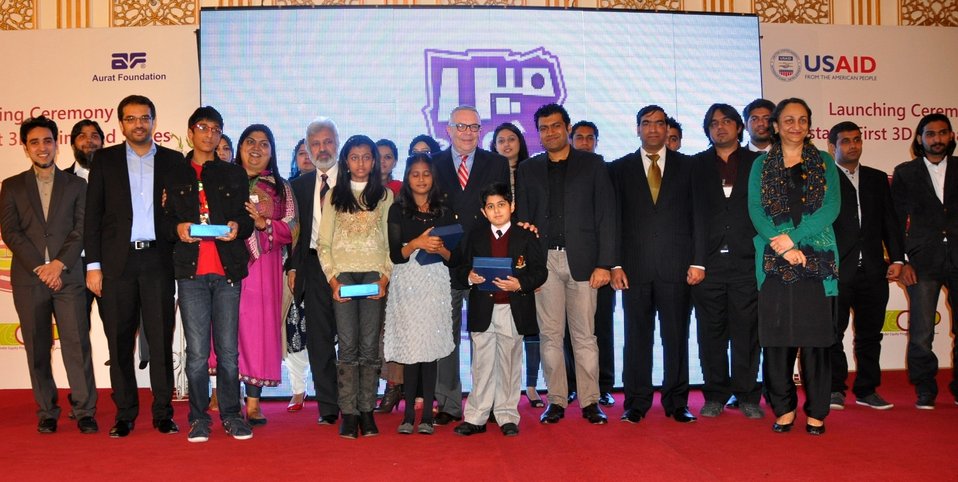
Group photo